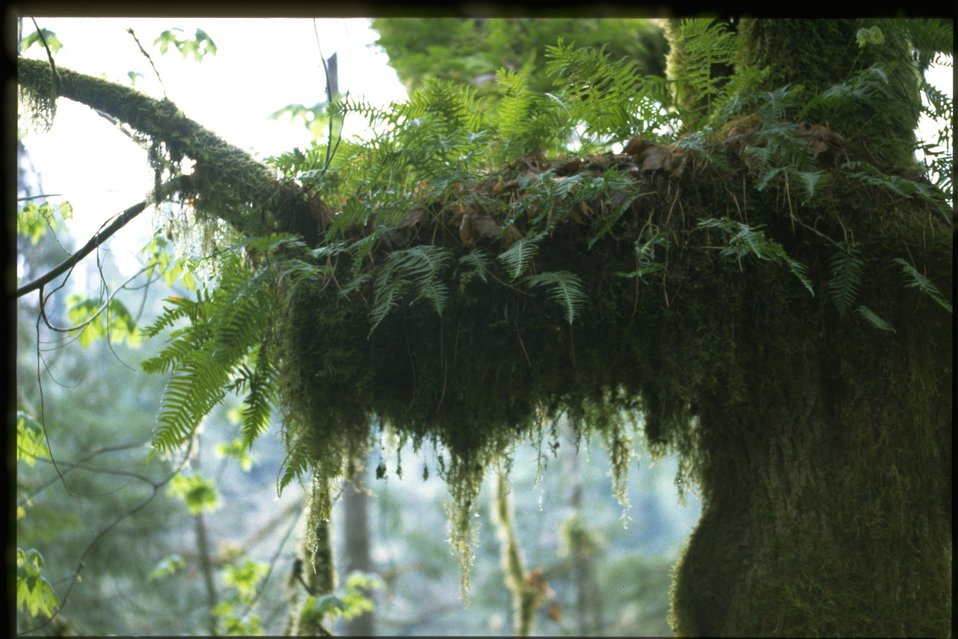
Polypodium glycyrrhiza.